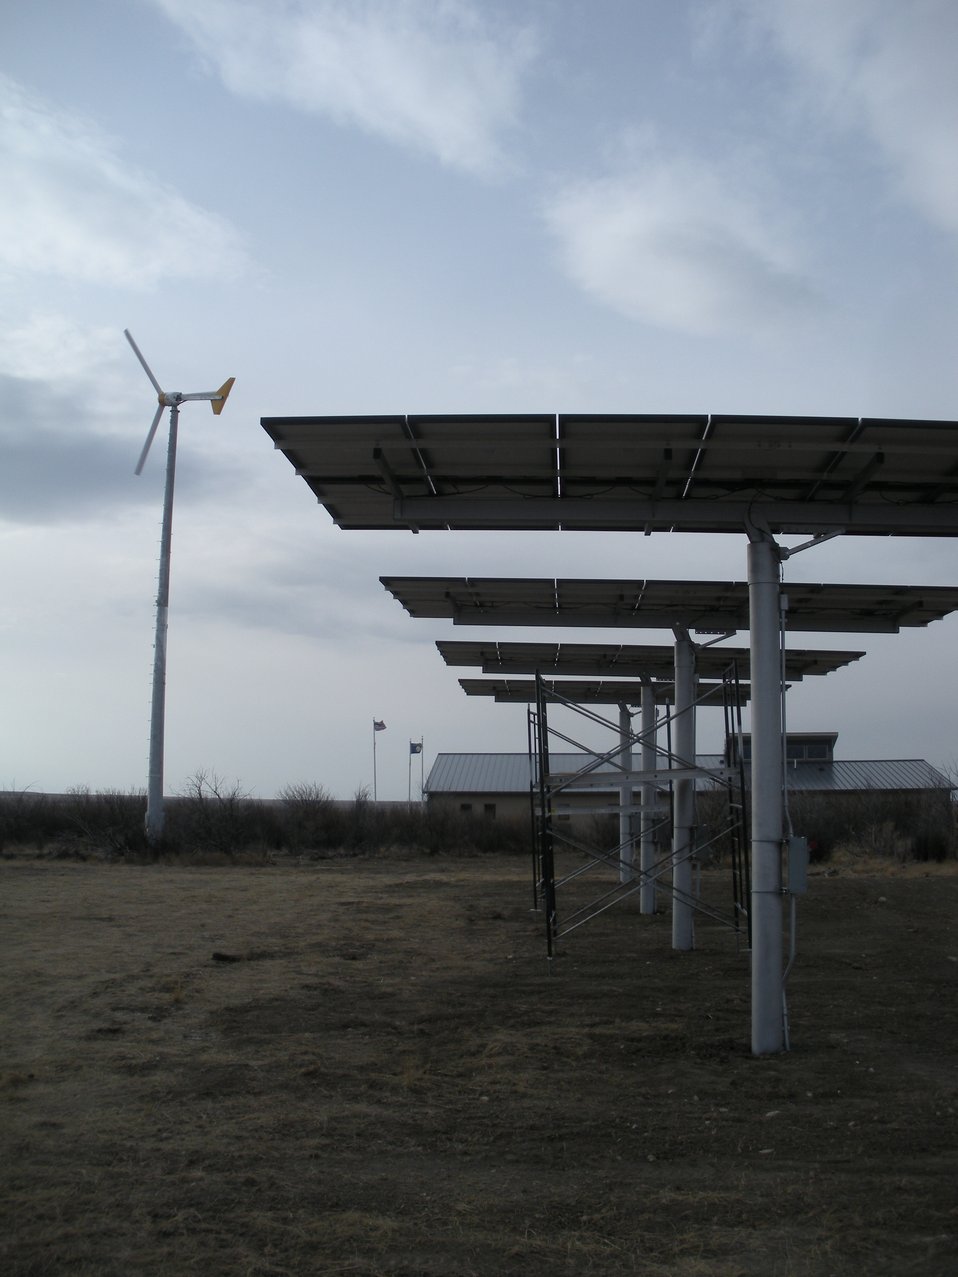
Renewable Energy at Benton Lake National Wildlife Refuge

Another view of the four solar arrays and wind turbine being utilized at Benton Lake National Wildlife Refuge in Montana. This energy project was funded by American Recovery and Reinvestment Act money.